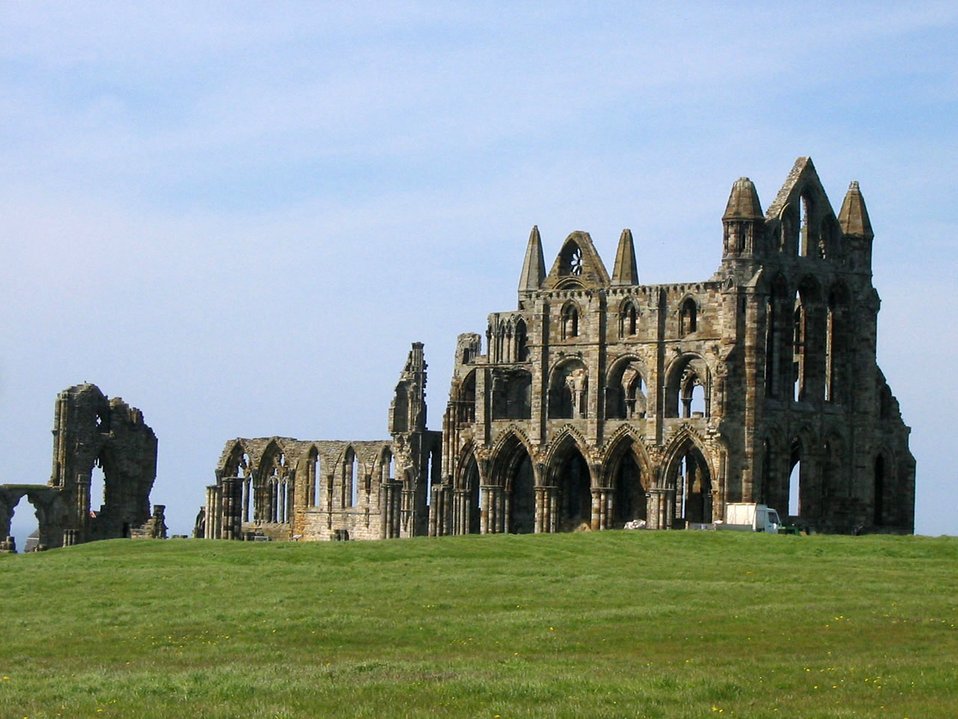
Whitby abbey in north yorkshire.